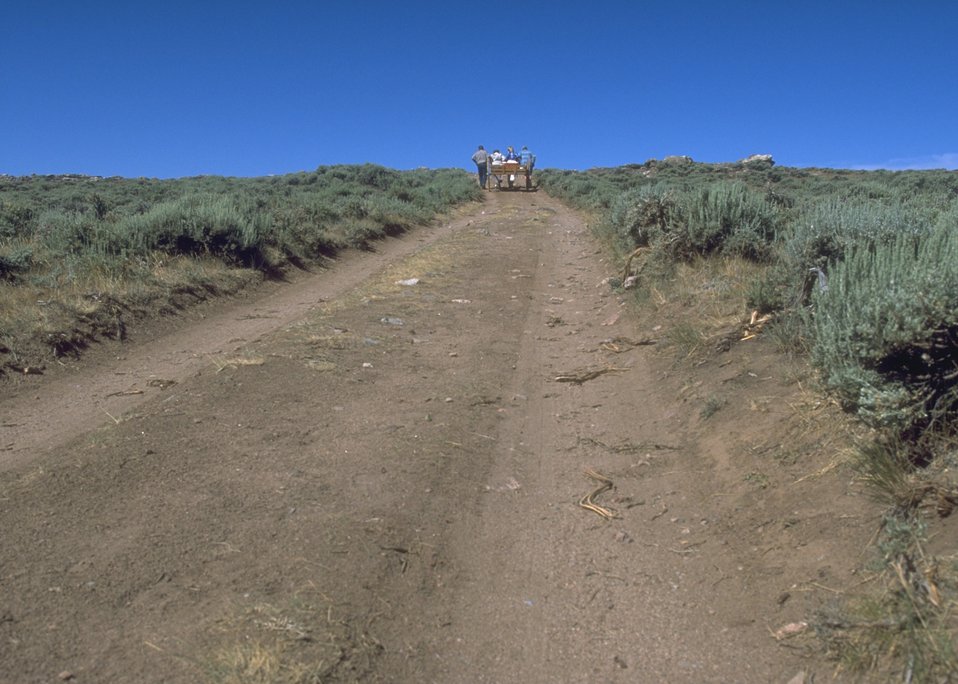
Hand cart re-enactment along the Mormon Trail, Lander Field Office.